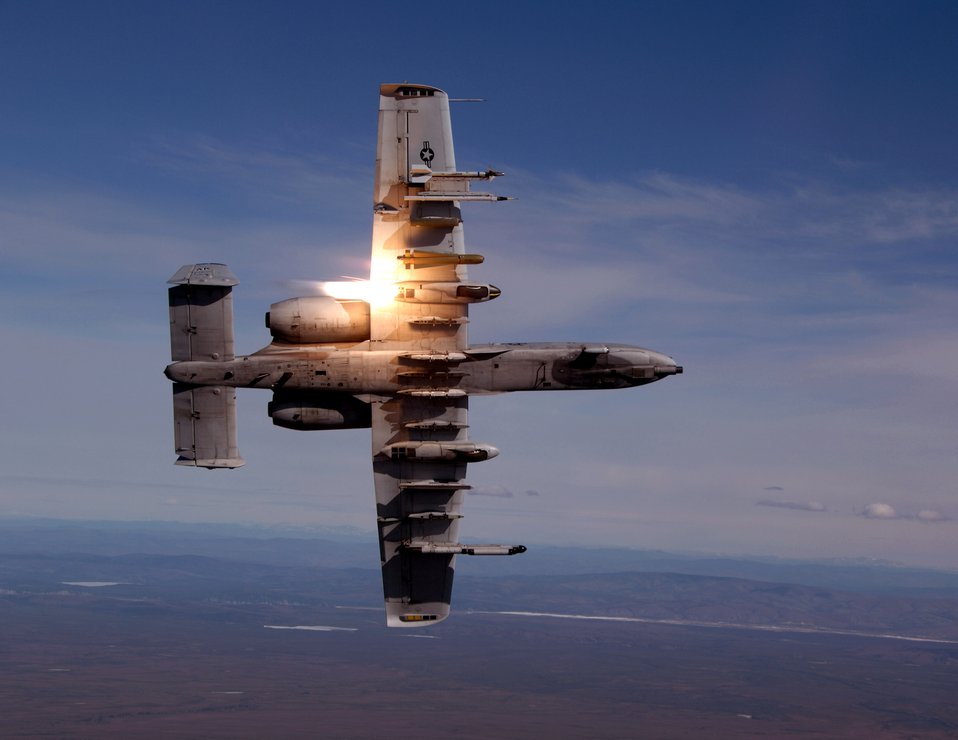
Thunder and lightning

Capt. Dustin Ireland fires a missile as his A-10 Thunderbolt II breaks over the Pacific Alaska Range Complex April 24 during live-fire training. The Captain Reynolds is an A-10 pilot from the 355th Fighter Squadron from Eielson Air Force Base, Alaska. Members from the 355th FS are tasked to provide mission ready A-10s and a search and rescue capability, in Alaska and deployed sites worldwide.